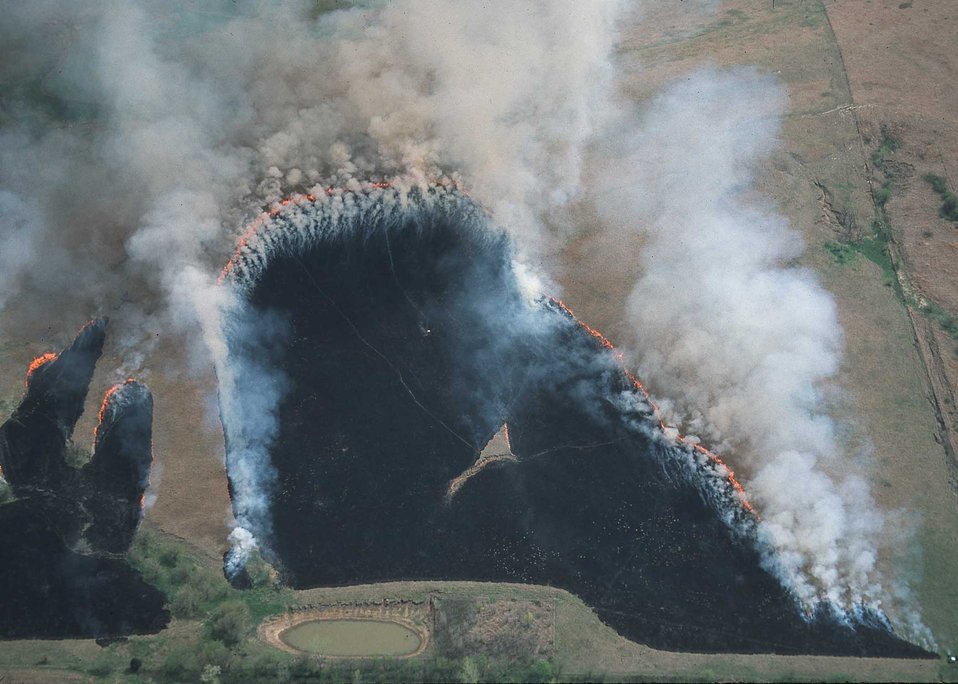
Aerial view of prairie burn to stimulate grass growth and production. Manhattan, Kansas.